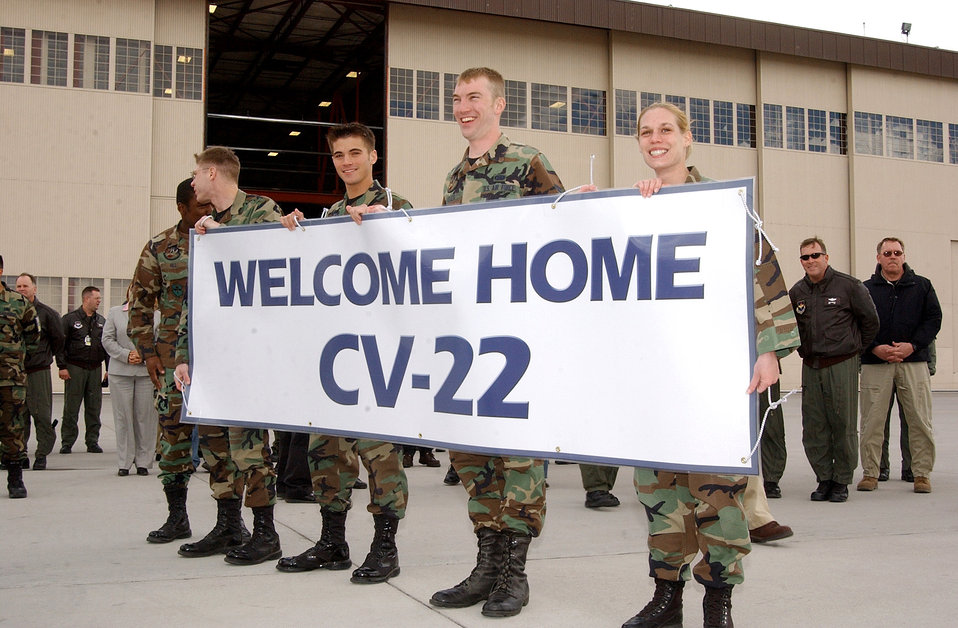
Osprey gets new nest

Airmen with the 58th Special Operations Wing hold a banner welcoming the Air Force's first operational CV-22 Osprey to Kirtland AFB, N.M., Monday, March 20, 2006. The aircraft was flown to Kirtland by Lt. Gen. Michael W. Wooley, commander of Air Force Special Operations Command.